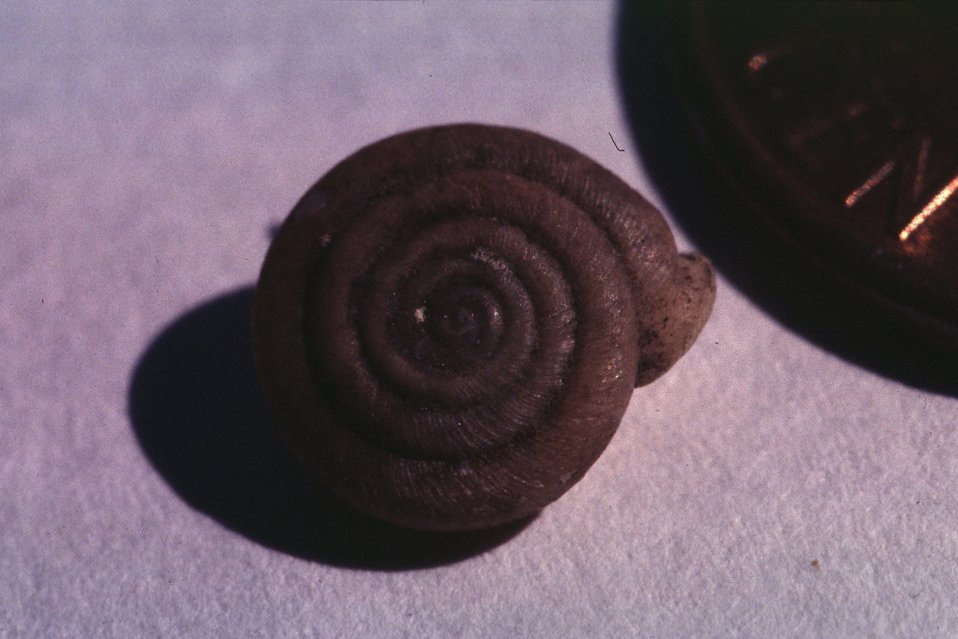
Tehama Chaparral (Trilobopsis tehemana)